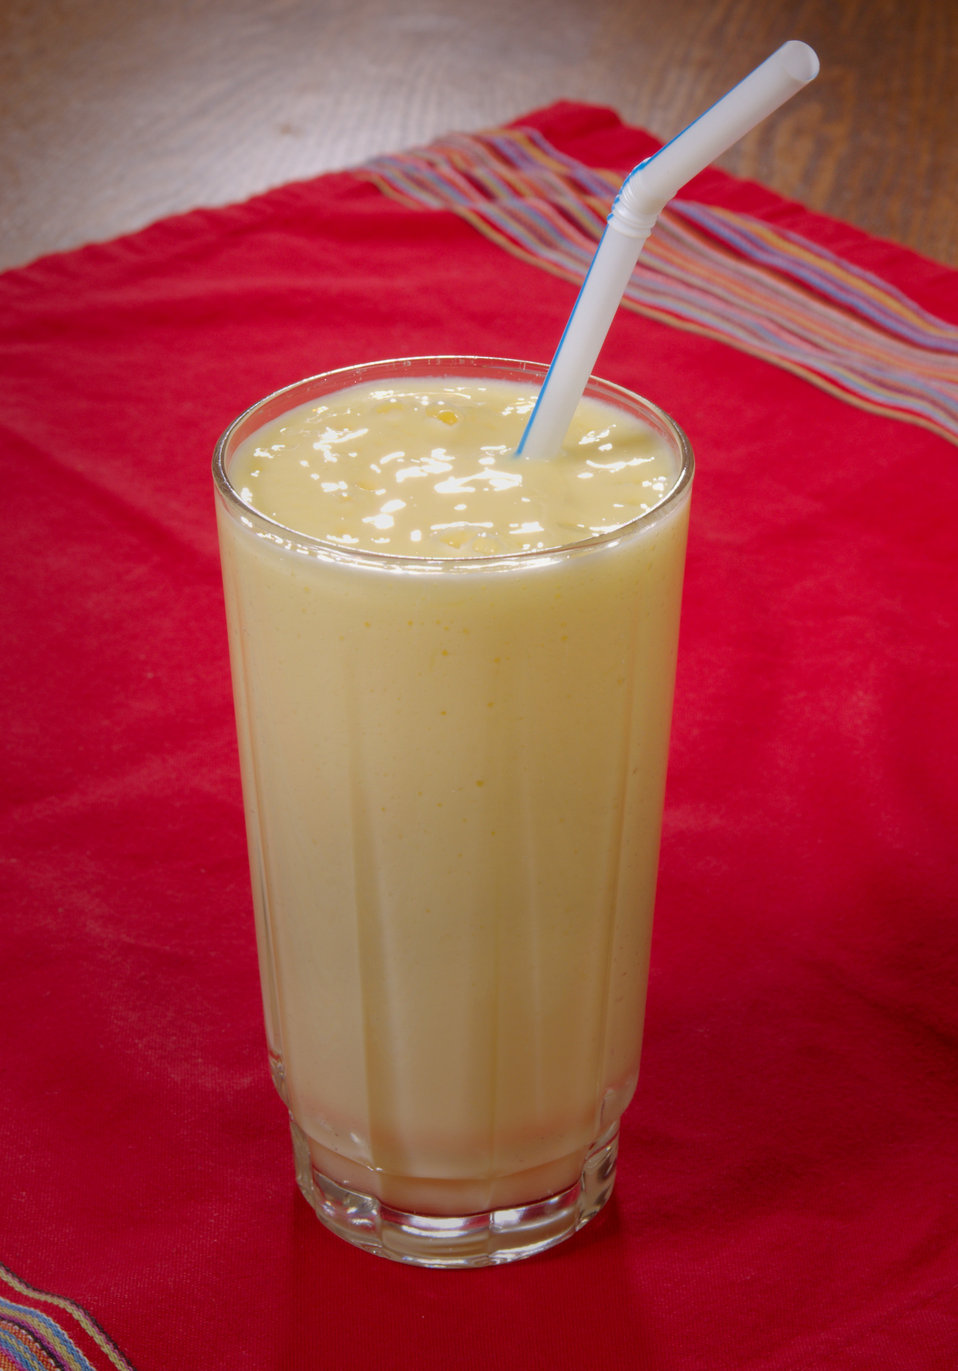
Mix and serve, this delicious Banana Yogurt Shake, is an easily-prepared, simple mixture of plain, low-fat yogurt, fresh banana, vanilla extract, cinnamon, nutmeg, fat-free milk, and ice cubes. The recipe may be followed using the link below. High in dietary fiber, protein, vitamins A and C, calcium and potassium, this shake makes for a great choice as a between meal snack, or even an on-the-go breakfast.